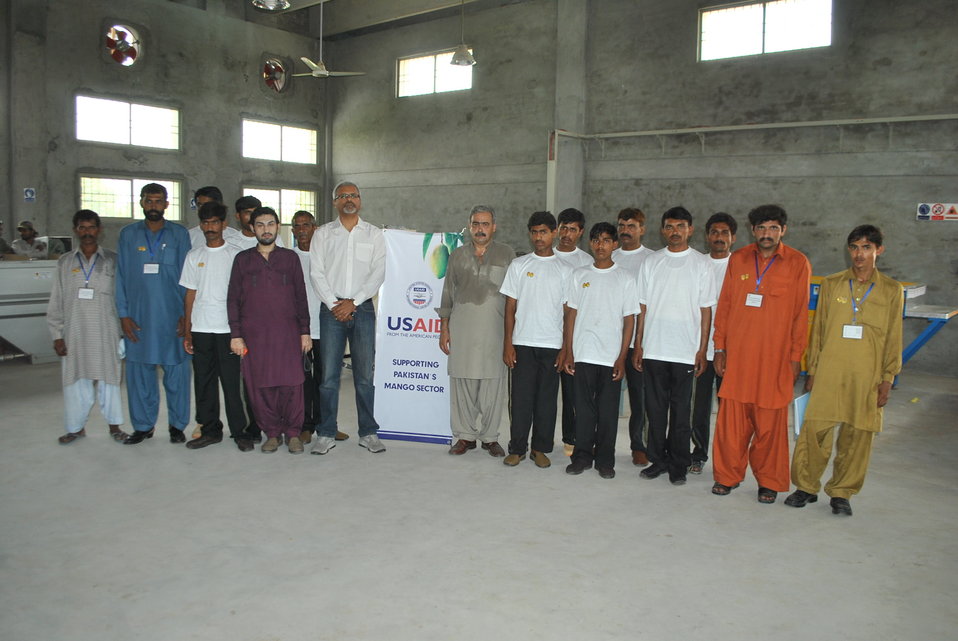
USAID supporting Pakistan's mango sector

USAID is helping 15 mango farms in Sindh and Punjab to install processing equipment to prepare mangoes for export to international markets, including Middle East, South East Asia and Europe. USAID has also trained 3,000 farmers how to handle and process mangoes to preserve their quality and shelf life.